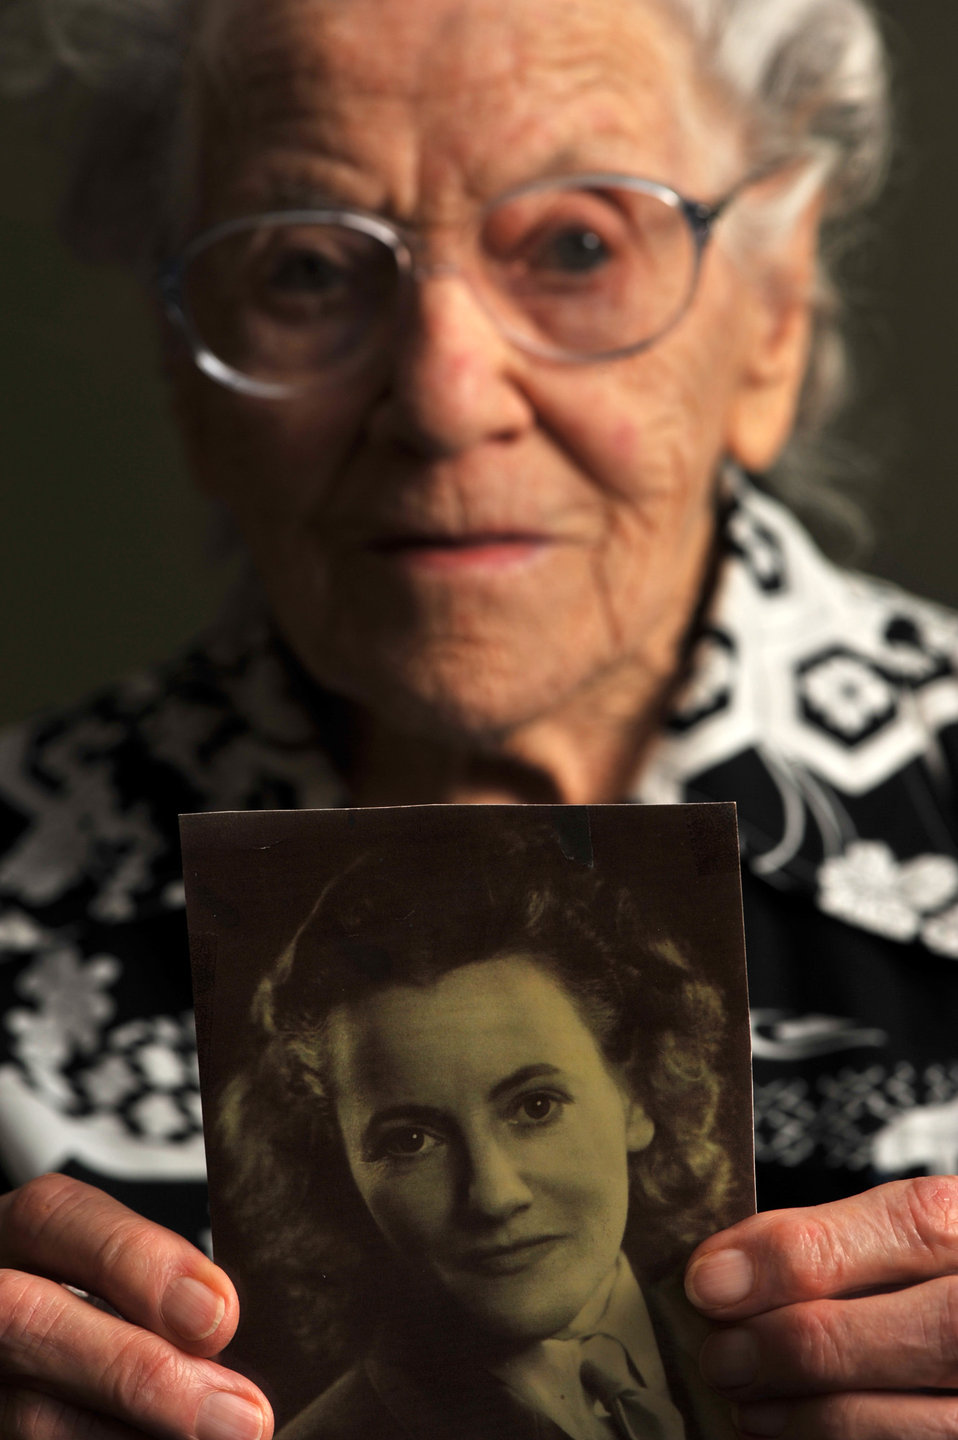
WWII female veteran

At the age of 103, Mildred McDowell is one of the Air Force's oldest female veterans. She resides in Vandalia, Ill.